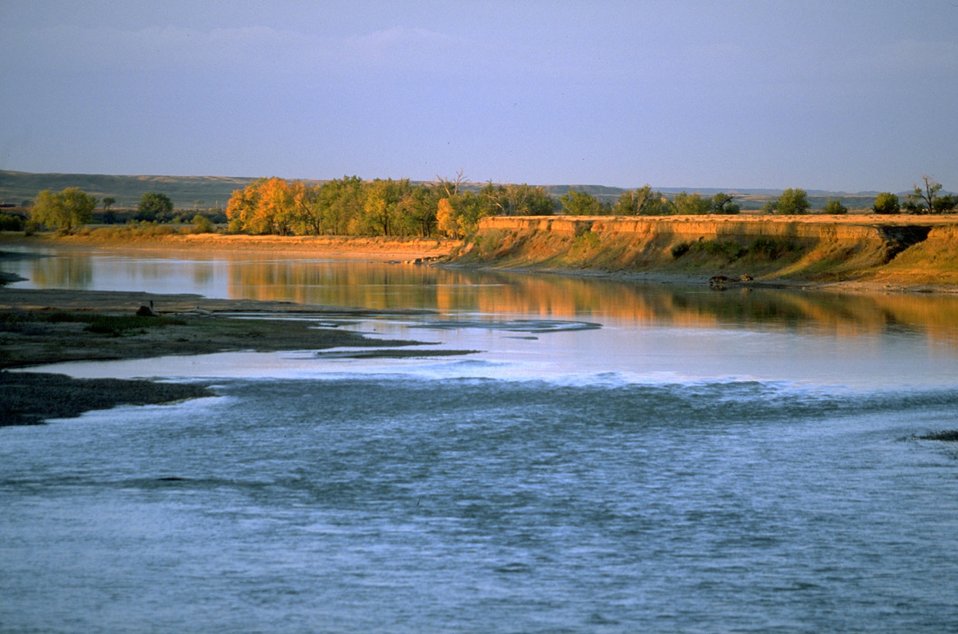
Sun shining on a Yellowstone River bank, reflecting in the water